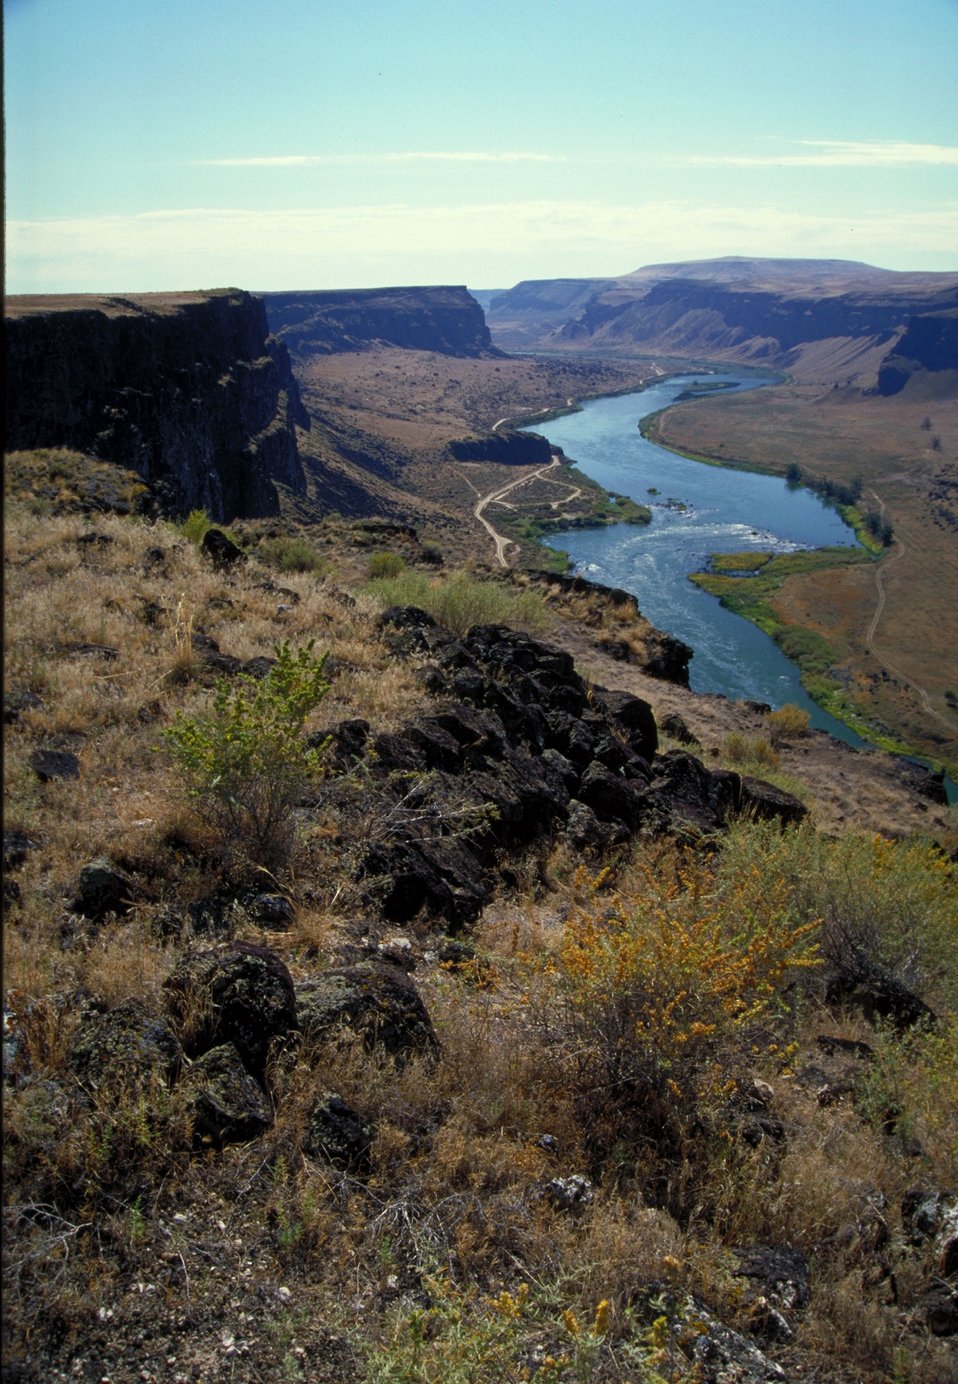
Snake River Birds of Prey National Conservation Area Scenic Four Rivers Field Office Lower Snake River District LSRD